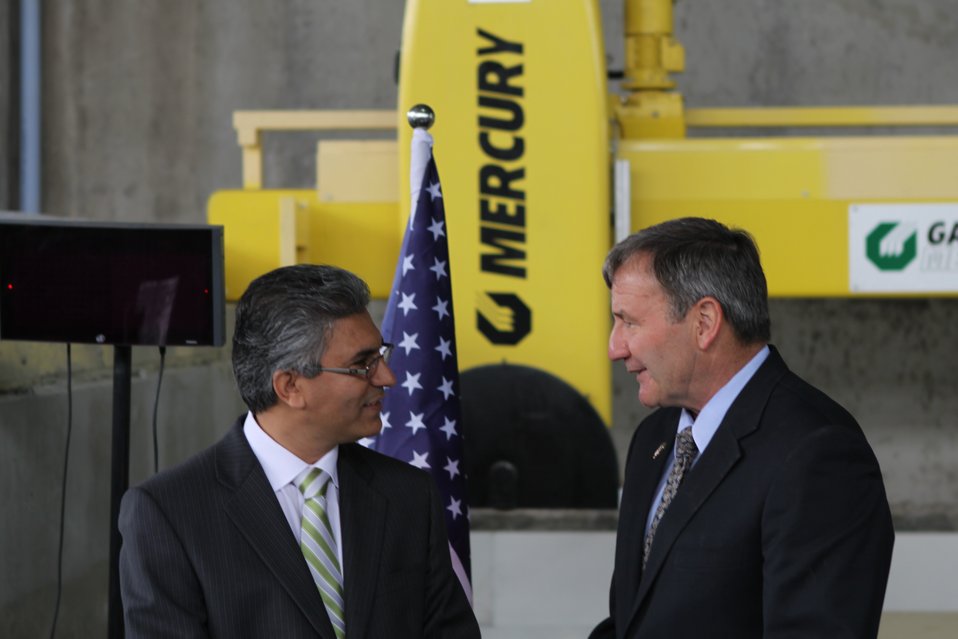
100525 Hirat Marble Conference 112